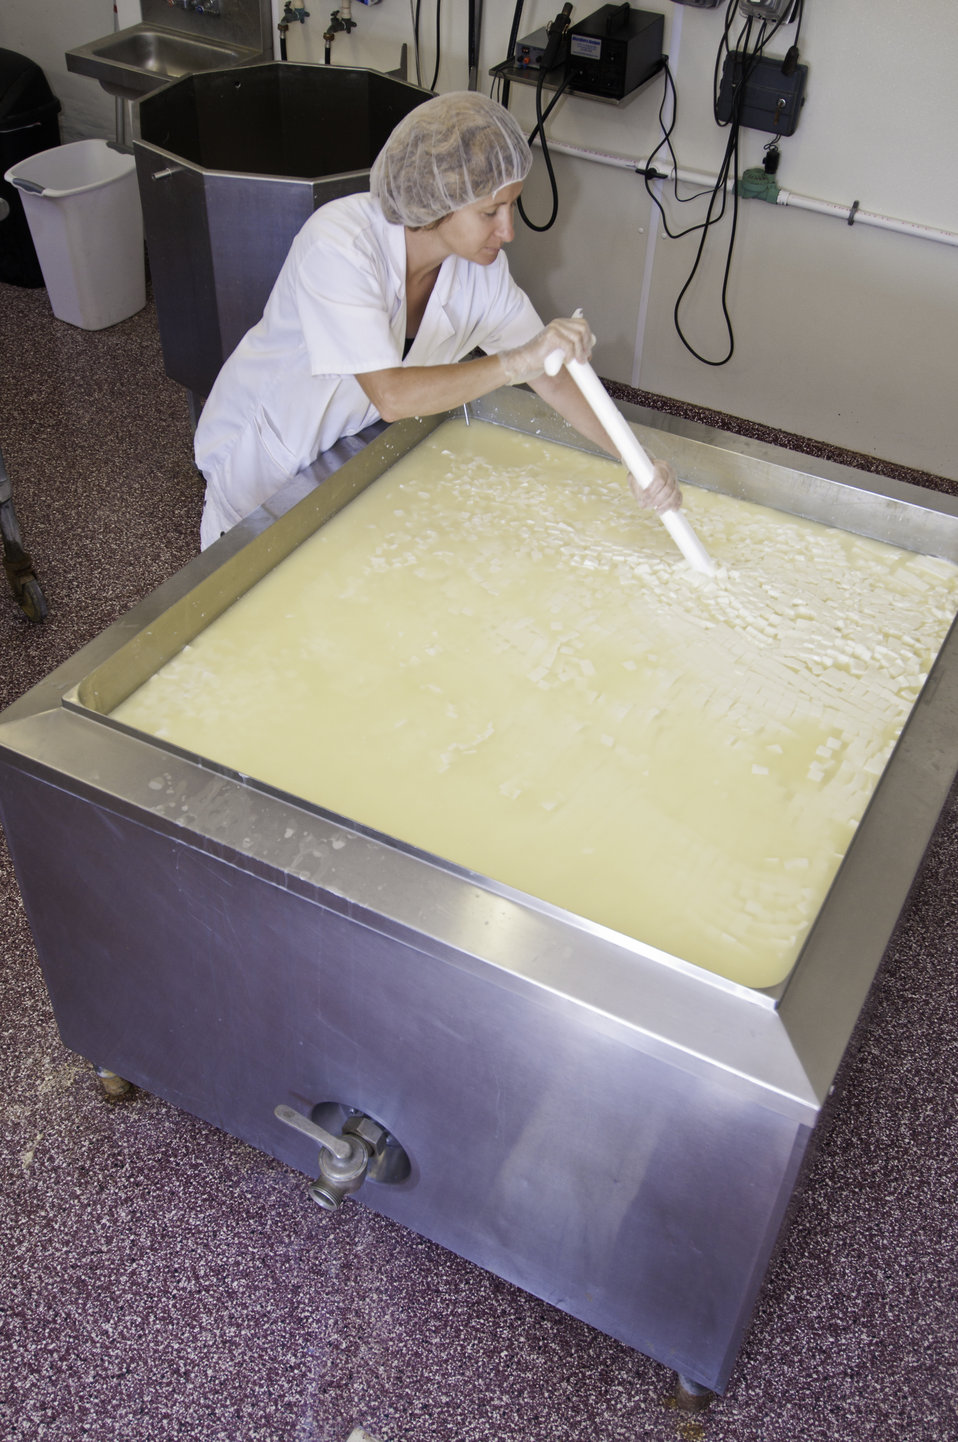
Chapel’s Country Creamery owner Holly Foster in Easton, MD has to constantly stir the milk curd of fresh raw milk so the milk curd that has been cut with curd knives does not set until whey has separated from the curd. The milk produced at the dairy is used to make artisanal cheeses. The dairy uses fresh raw milk 12-24 hours old. The milk is all-natural and contains no synthetic hormones, antibiotics, or chemical compounds. The 1150 pounds of milk in the vat will be used to make the dairy’s “Bay Blue” Cheese.